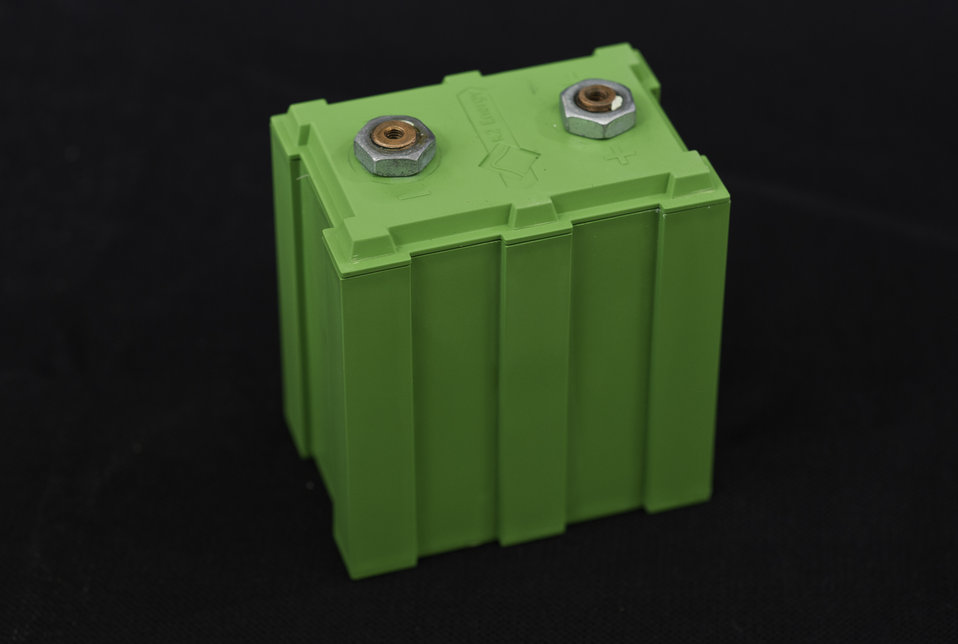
Battery modules being tested at the Thermal Test Facility at the National Renewable Energy Laboratory.